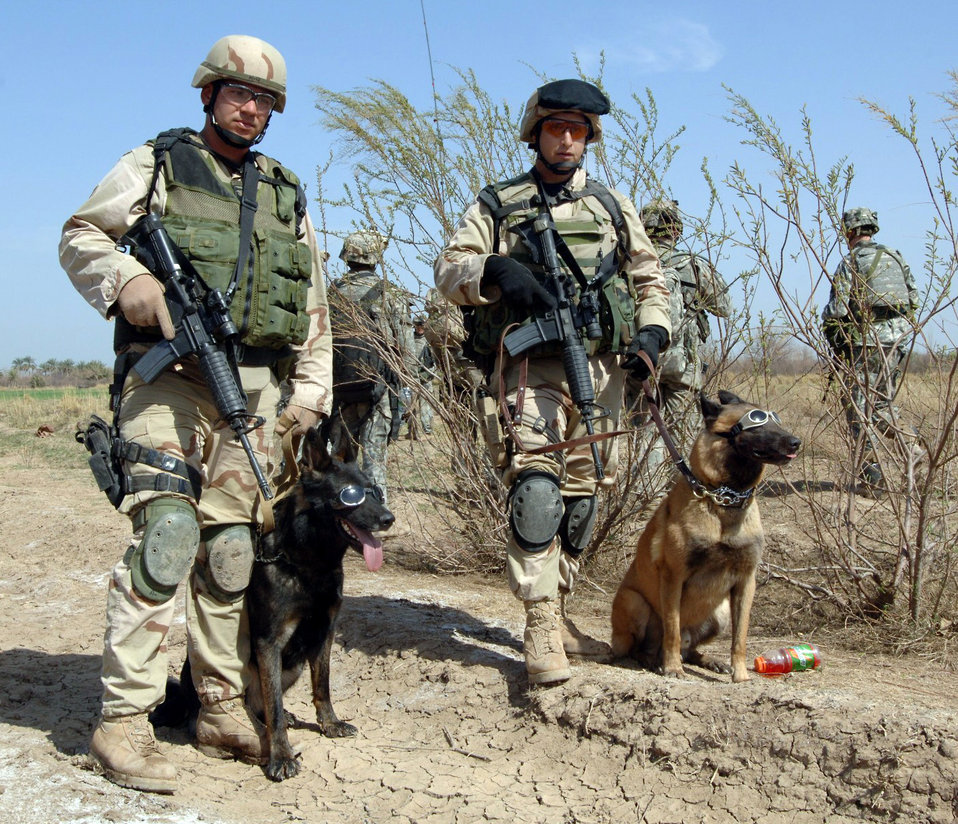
Protective

Tech. Sgt. John Mascolo and his military working dog, Ajax, left, await a helicopter pickup with Staff Sgt. Manny Garcia and his dog, Jimmy, outside Forward Operating Base Normandy, Iraq, on Tuesday, Feb. 28, 2006. The dogs are wearing